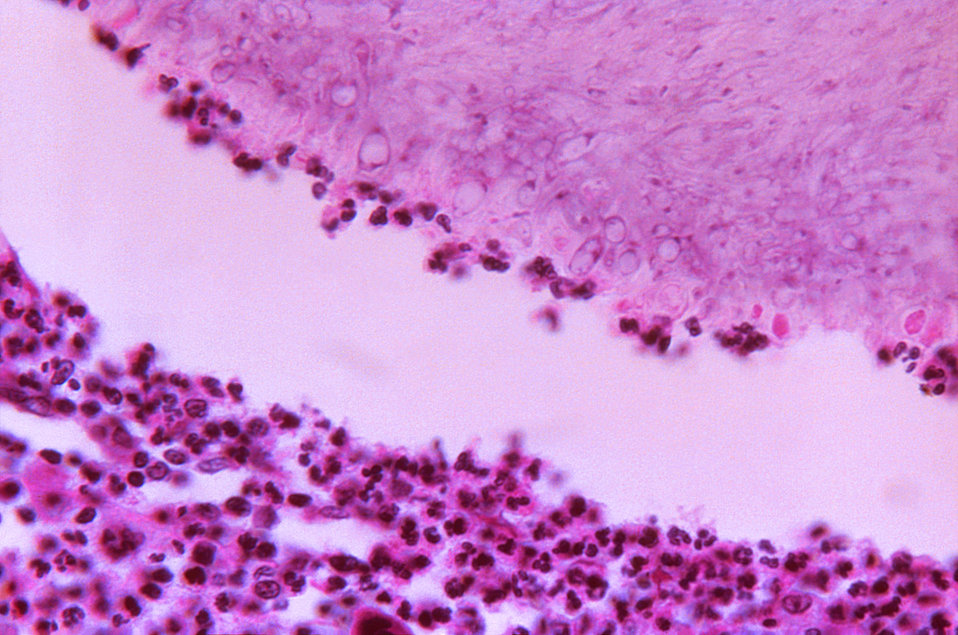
Under a magnification of 600X, and using the hematoxylin-eosin (H&E) staining method, this photomicrograph revealed the histopathologic changes found in a tissue section from a patient with a case of eumycotic mycetoma, which was due to the organism, Pseudallescheria boydii, formerly known as Allescheria boydii, an ascomycetous mould.